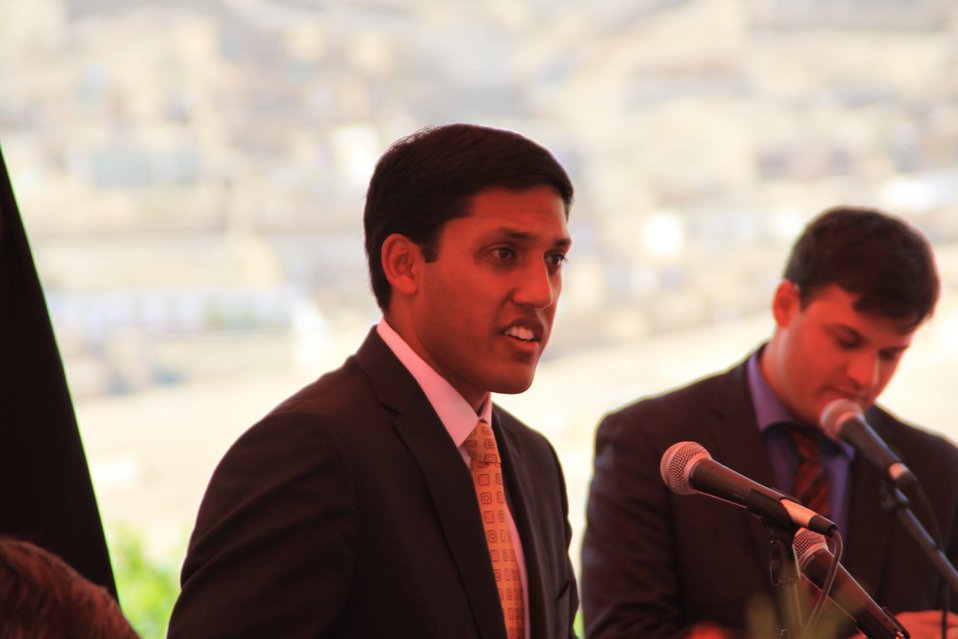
Badam Bagh Farm